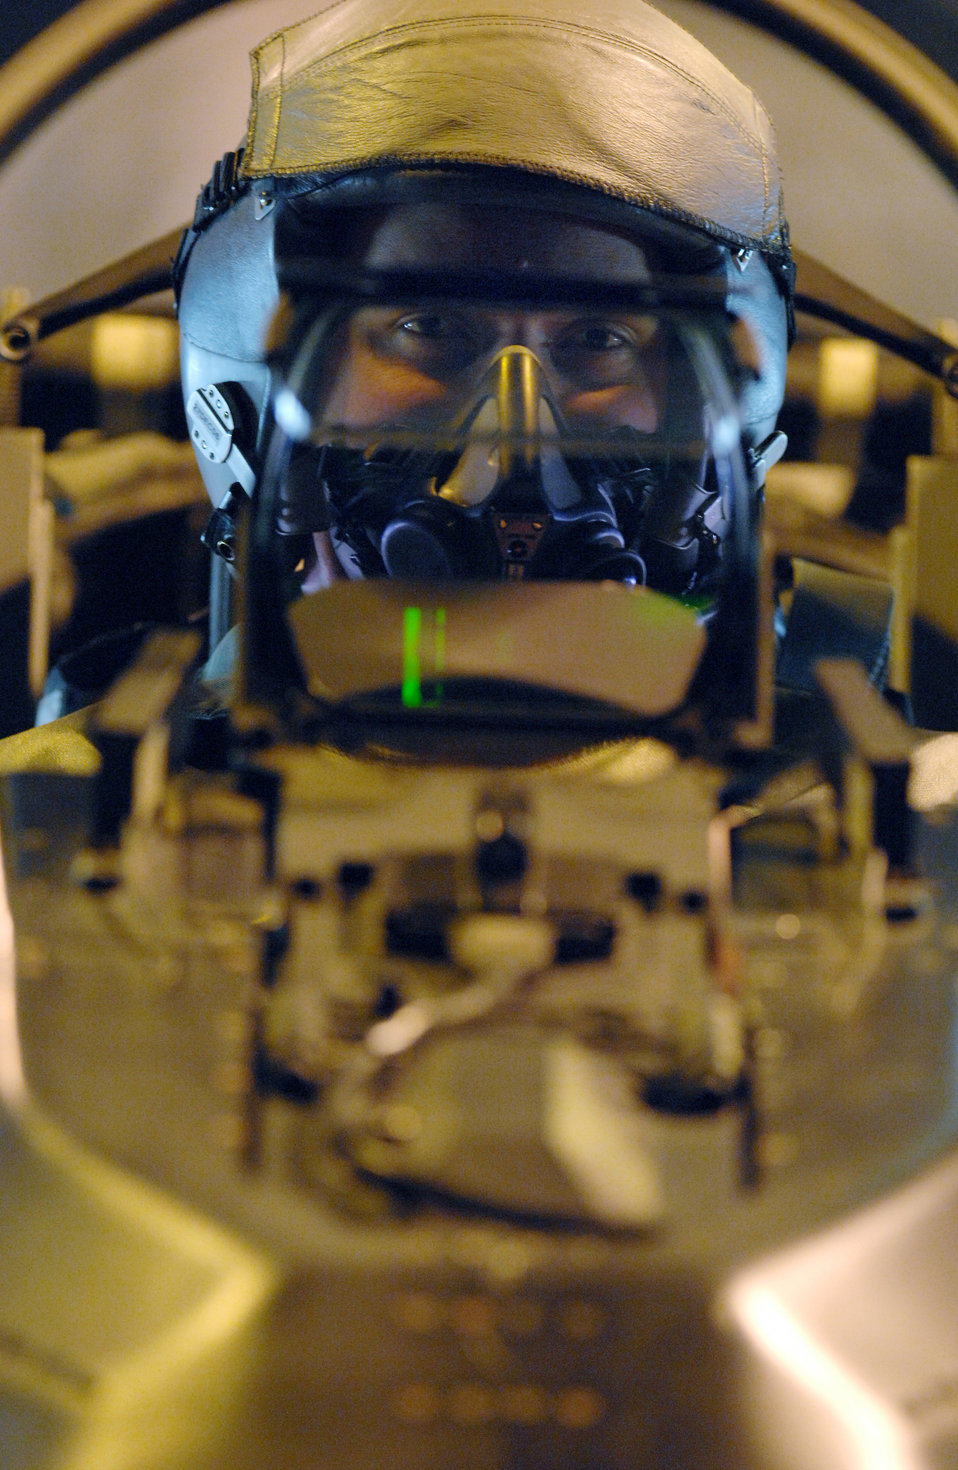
NATO security

First Lt. Aaron Johnson conducts a preflight inspection on an F-16 Fighting Falcon aircraft Nov. 29 at Aviano Air Base, Italy. The aircraft was on standby to provide security in the sky over the summit in Riga, Latvia.